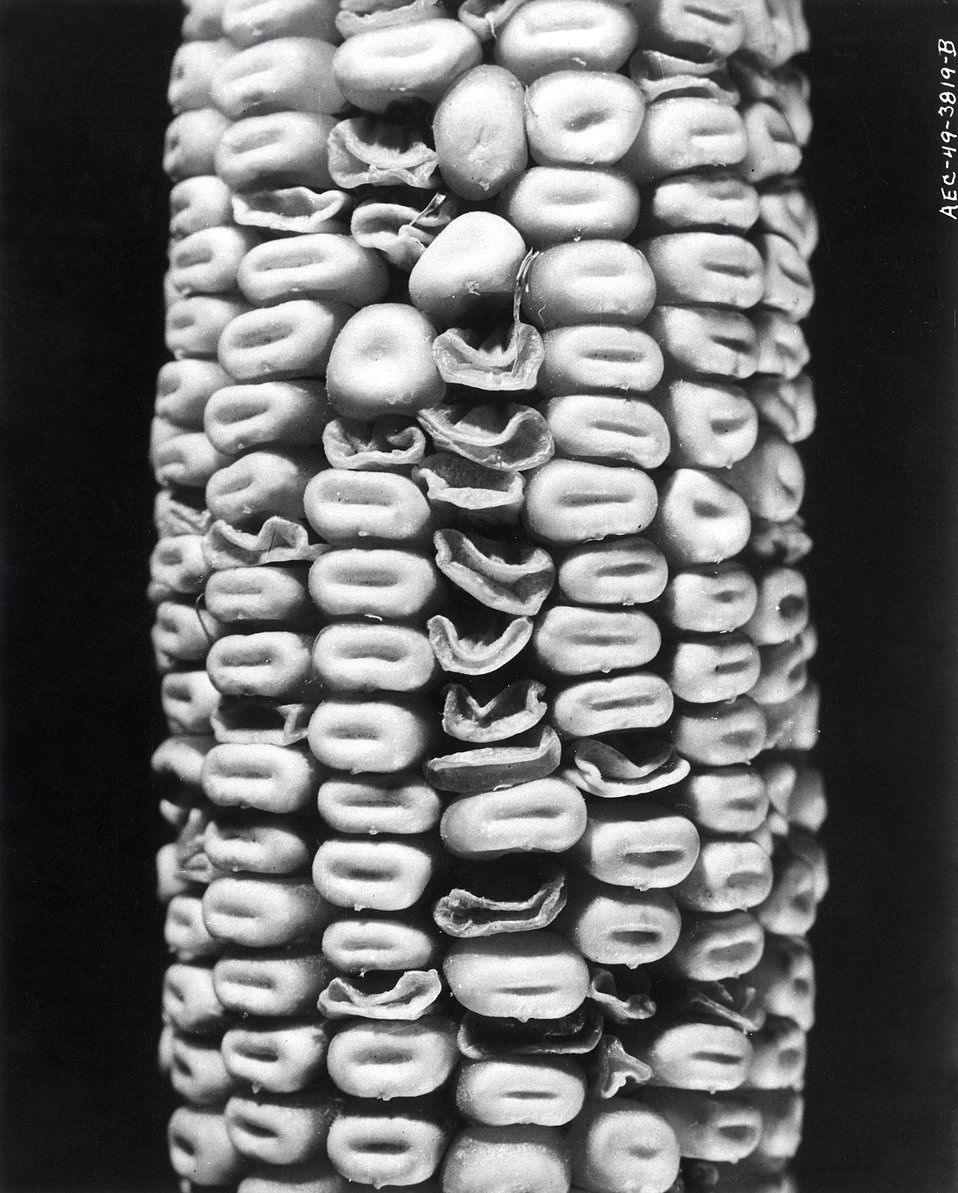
Corn grown from seed exposed to atomic bomb at Bikini shows effects of Irradiation, in tests at the California Institute of Technology.